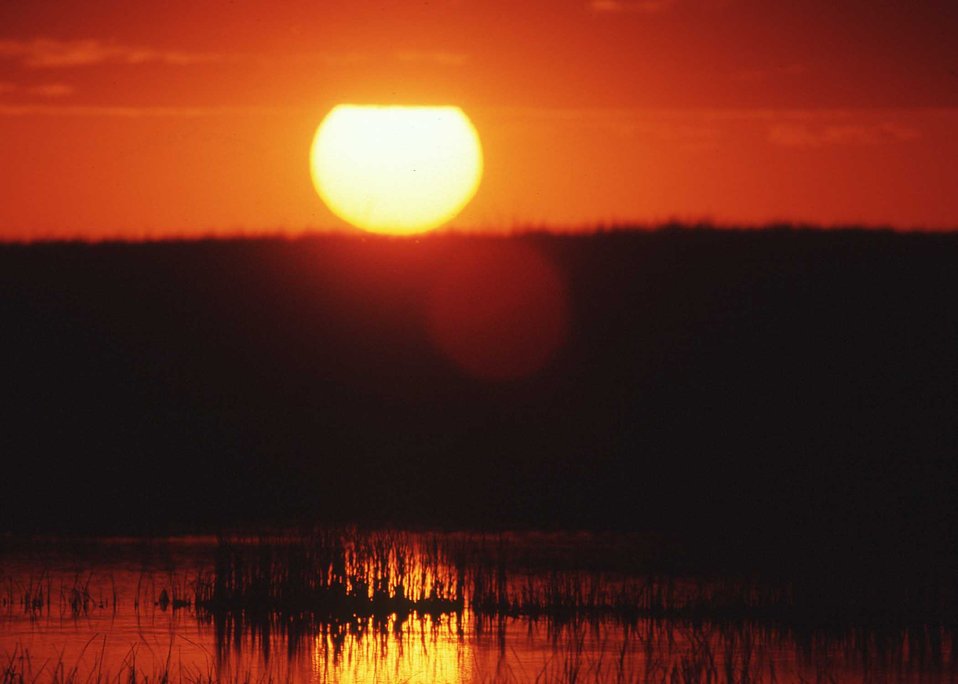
Marsh at sunset in Moody County, South Dakota.